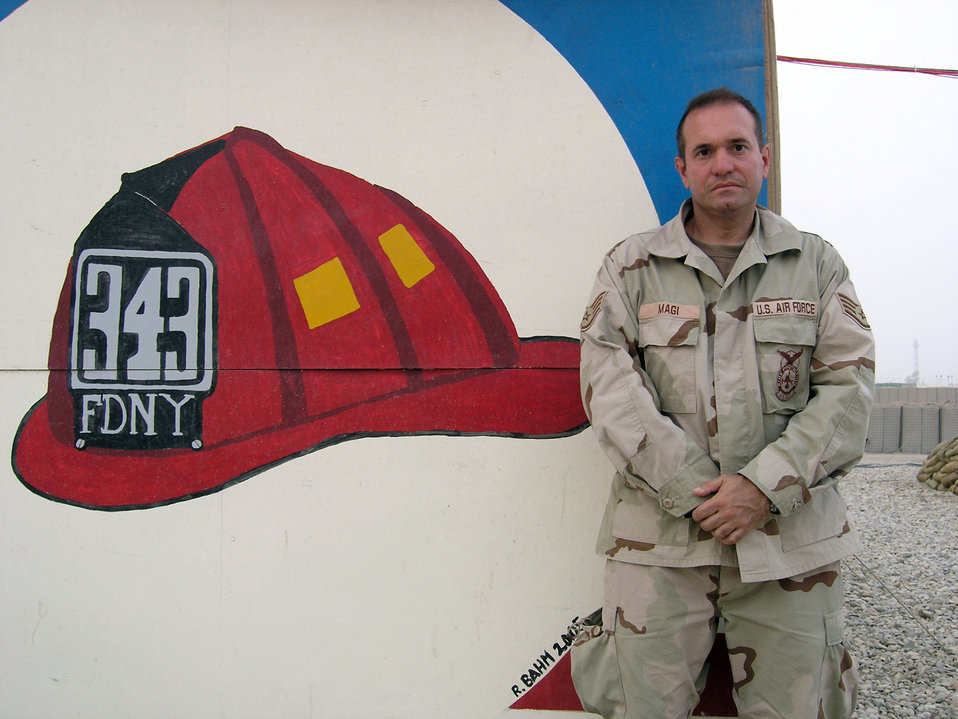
Airman gets FDNY promotion while deployed to Iraq

ALI BASE, Iraq -- Staff Sgt. Gregg Magi poses in front of a mural remembering the 343 firefighters who lost their lives at Ground Zero trying to help the victims of Sept. 11, 2001. Sergeant Magi was promoted to the rank of lieutenant in the Fire Department City of New York during a ceremony via telephone Aug. 16. He is a firefighter with the 407th Expeditionary Civil Engineer Squadron and is deployed from the New York Air National Guard's 105th Airlift Wing.